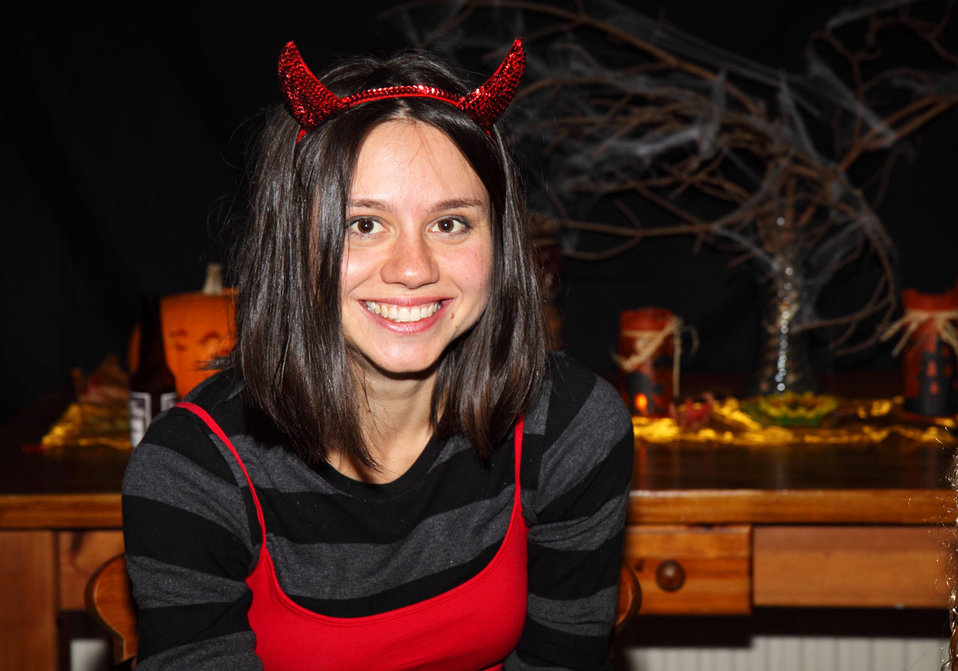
Devil costume

Youg woman wearing halloween devil costume.